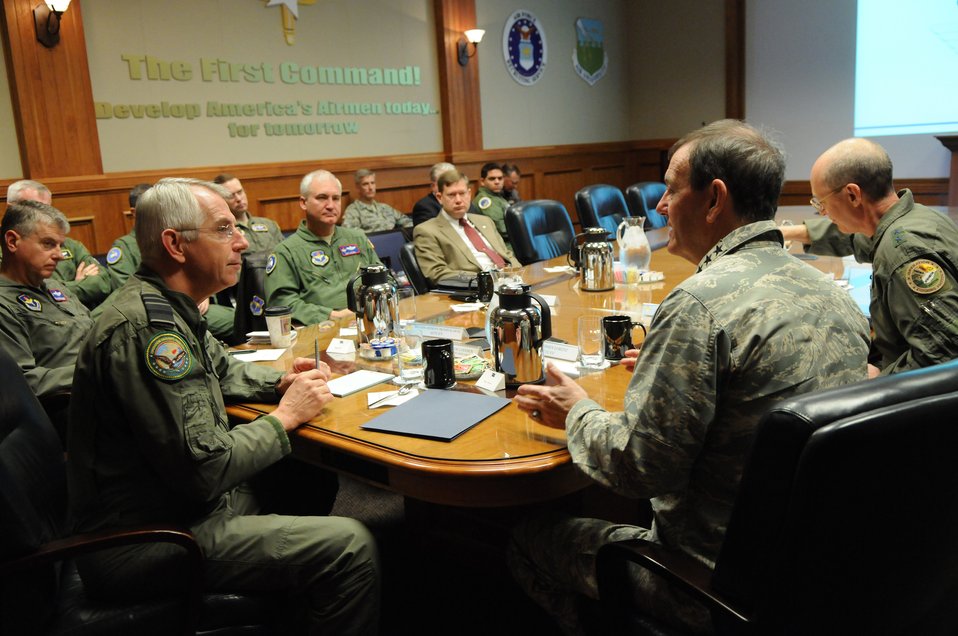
Dutch partnership emphasizes innovations in training

Royal Netherlands air force Lt. Gen. J.H.M.P. Jansen learns about innovations in Air Force training programs Feb. 15, 2010, during a visit to Randolph Air Force Base, Texas. General Jansen is the commander of the Royal Netherlands air force